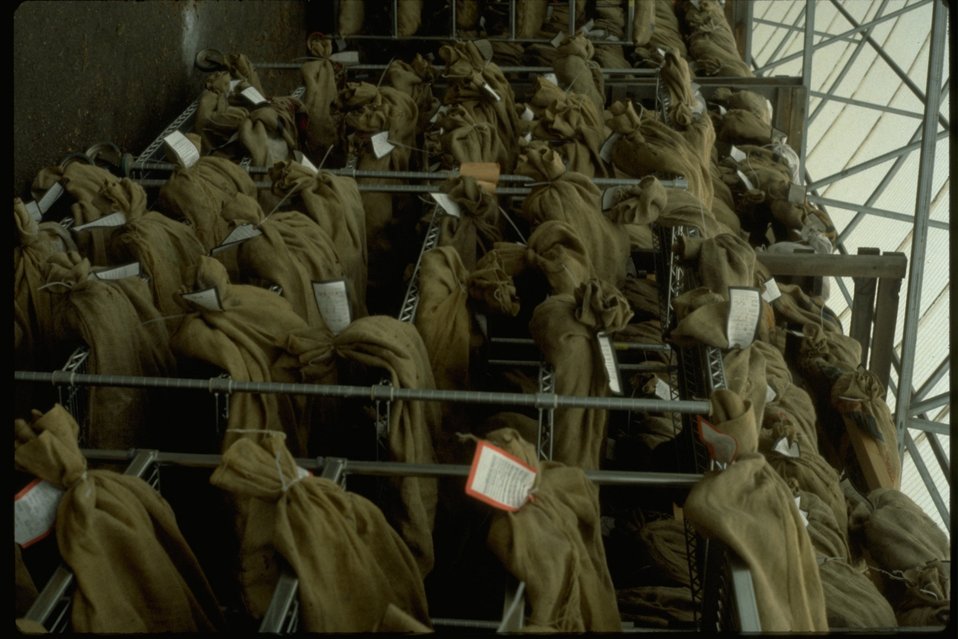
Many large bags of cones at the Horning Seed Orchard.